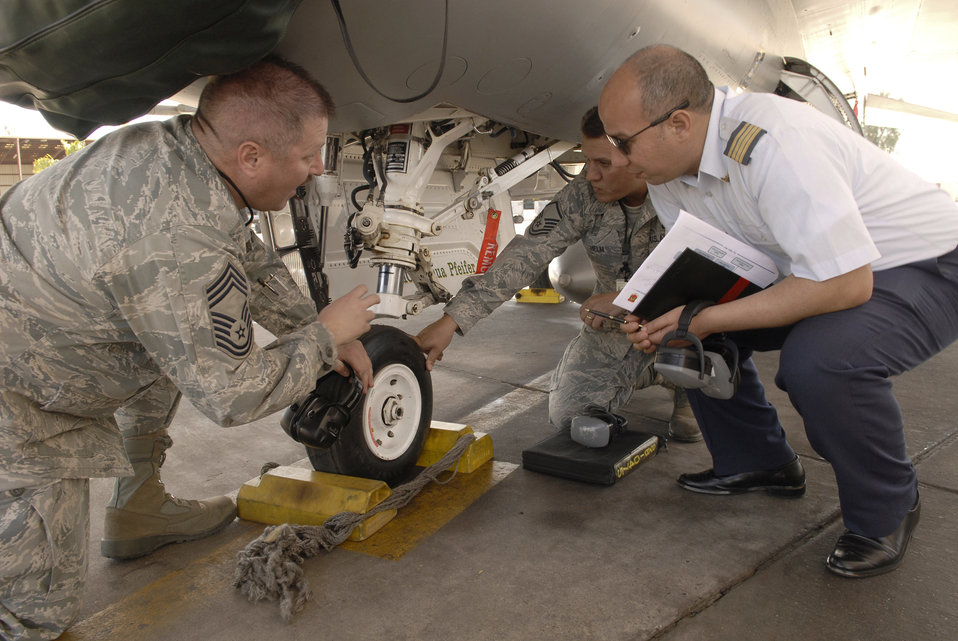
Luke Airmen advise Moroccan air force on F-16 operations

Chief Master Sgt. Robert Britton and Master Sgt. Michael Helm discuss features of the F-16 Fighting Falcon nose landing gear with a member of the Royal Moroccan air force March 12 at Luke Air Force Base, Ariz. Members of the Royal Moroccan air force visited Luke AFB to learn about Air Force maintenance procedures. Chief Britton and Sergeant Helm are assigned to the 310th Aircraft Maintenance Unit.